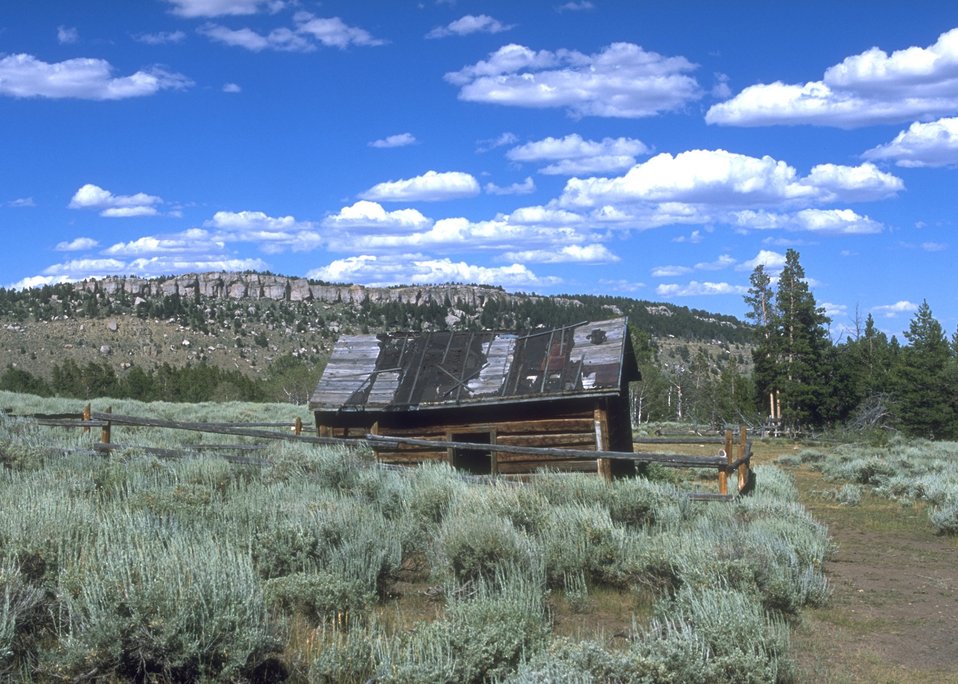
Structures at Miners Delight, Lander Field Office.